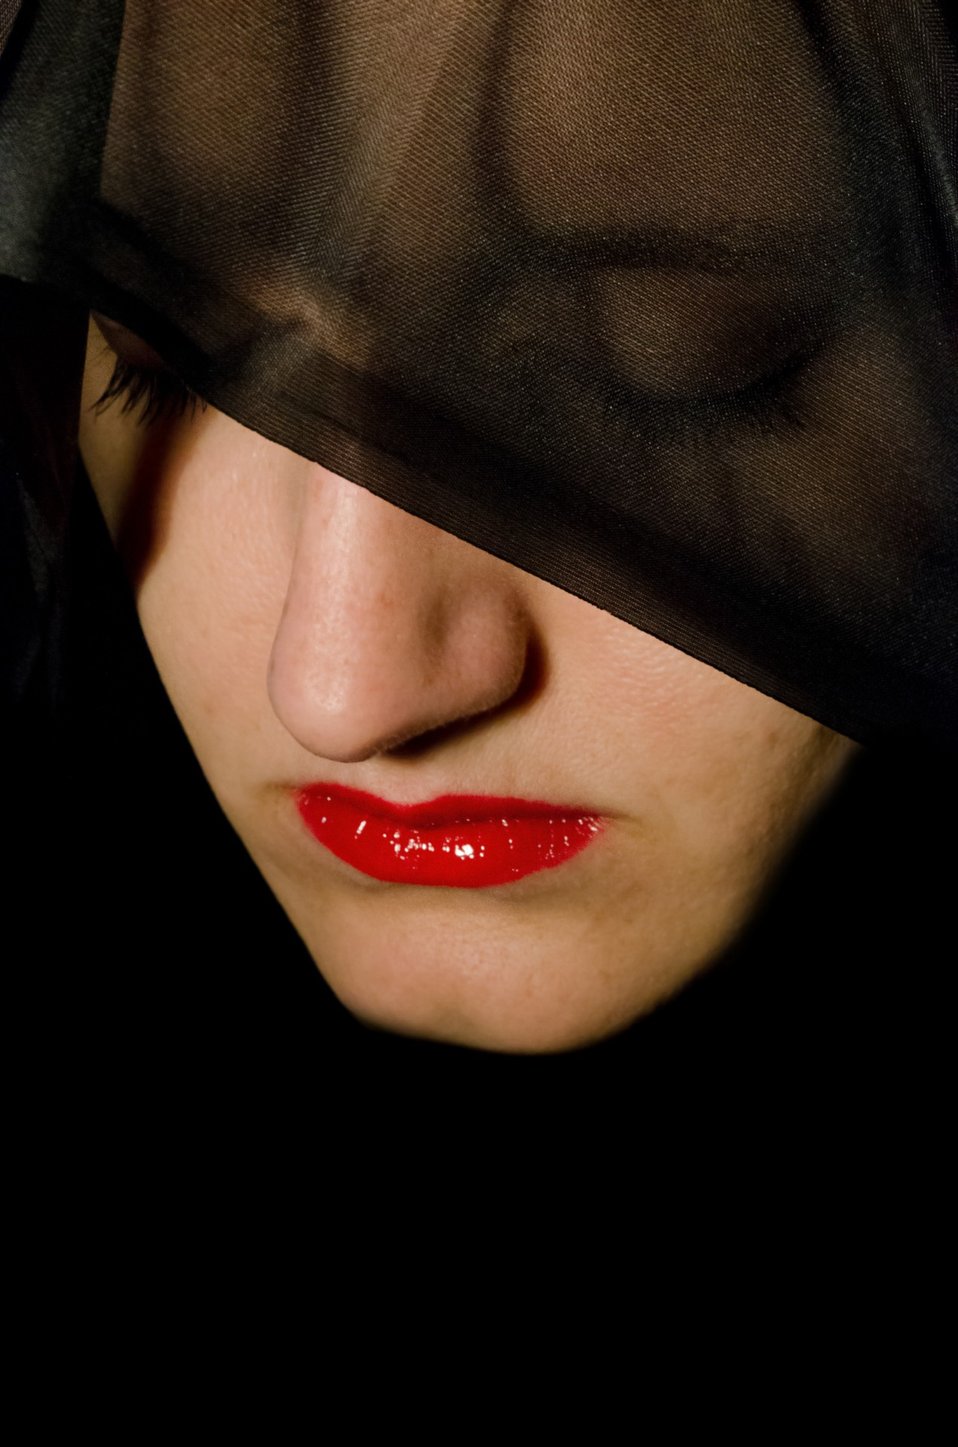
Woman and red lips.